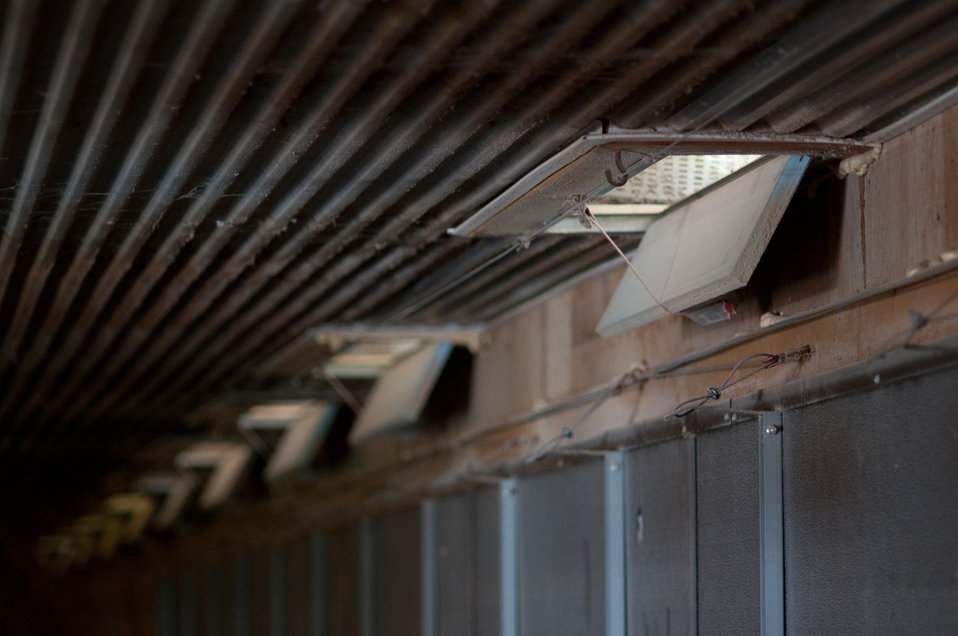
Ceiling mounted vents at the Roxanne and Matthew Molnar 80,000 chicken farm in Grantville, PA, on Thursday, April 21, 2011. The Molnar’s were recipients of a $20,000 Rural Energy for America Program (REAP) grant. The money is a portion of the cost to modernize the second of two 40,000 chicken capacity chicken houses. Chickens need to be kept at a comfortable temperature to remain productive. New radiant heaters keep the chickens warm during Pennsylvania winters. On warm days, ceiling vents provide passive venting of heat out of the building; when chicken house temperatures are estimated to be above 90 degrees, fans come on, pulling air through water evaporator elements lowering air temperature down 10-15 degrees and flows along the chicken house's length, in effect a tunnel of cooled air. The benefits to the chickens are heat and excess moisture removal; minimized dust and odor; limits buildup of ammonia and carbon dioxide; and provides oxygen for respiration. All these systems are computer controlled allowing owner, Roxanne Molnar to run the farm by herself and raise two small boys Gavin (2) and Grant (5). Husband, Matthew works off the farm and frequently travels, so along with the demands of parenting and manually controlling fans, vents, and having to remove the 80,000 chickens from their feeders and moving them around to cool them was an increasingly daunting task. The computer controls of the new system automate many of the daylong tasks allowing the Molnar’s to run their family farm. USDA Photography by Lance Cheung.